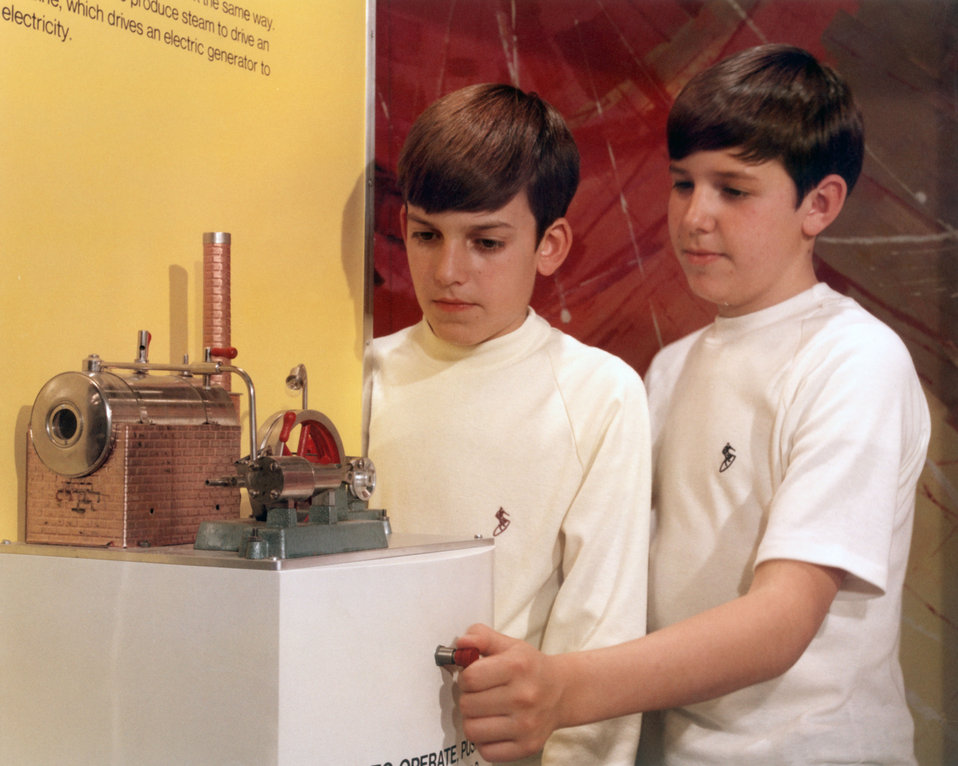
Exhibit at the American Museum of Science and Energy ' Energy For Today' Oak Ridge

75-27-1 DOE photo by Frank Hoffman

Exhibit at the American Museum of Science and Energy ' Energy For Today'
Jan. Oak ridge Tennessee 1975